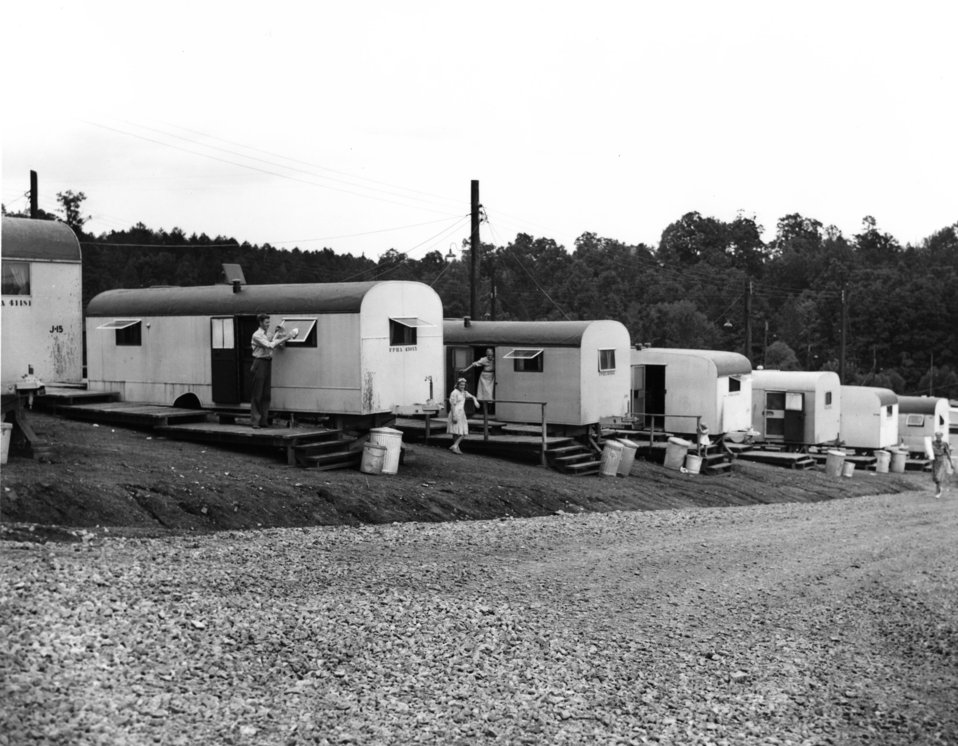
Housing at Oak Ridge